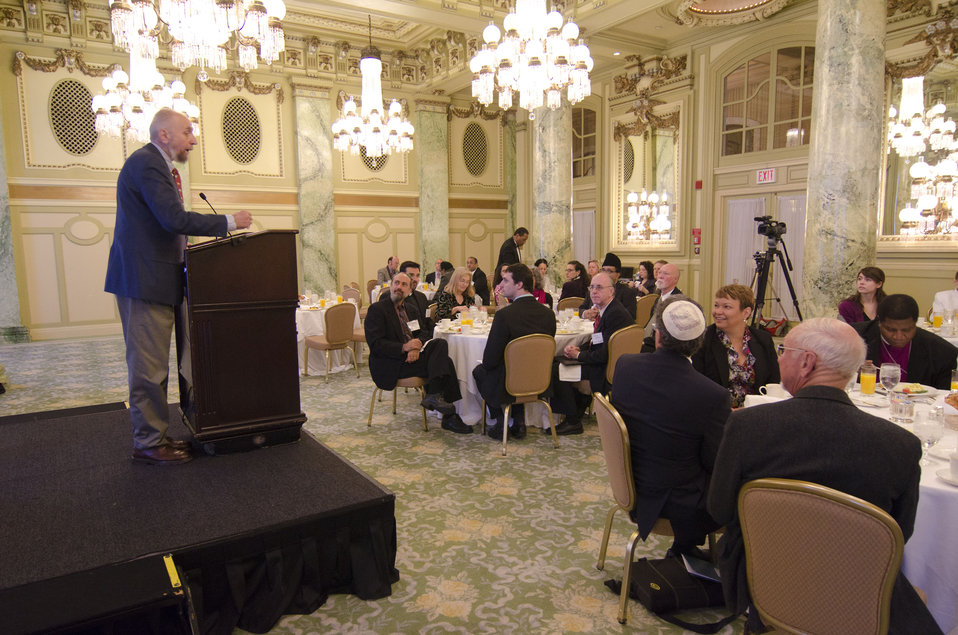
2011-05-05 NRCCCPrayerBreakfast 031

Frederick Krueger, Executive Coordinator for the National Religious Coalition on Creation Care Prayer Breakfast gives remarks as US EPA Administrator Lisa P. Jackson listens.